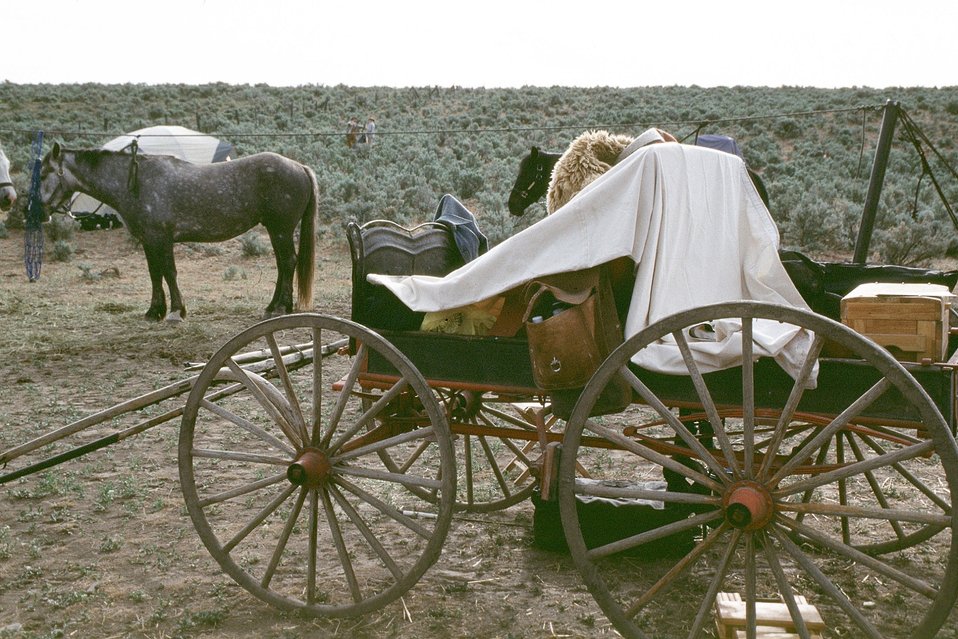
NHOTIC 10th Anniversary, wagon train reenactment. Covered wagon at encampment.